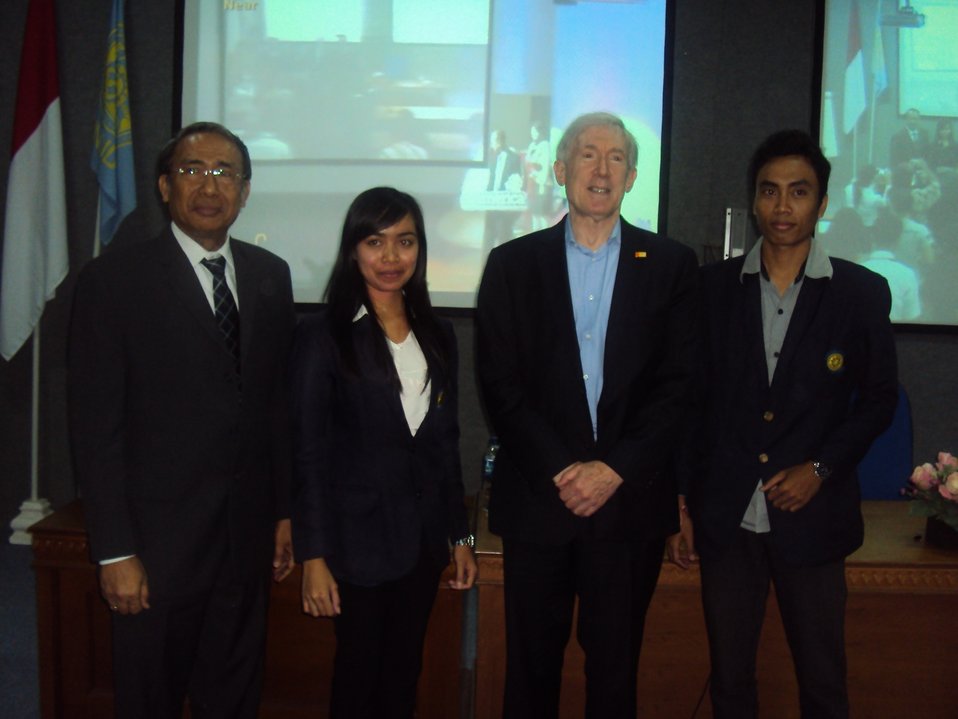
Under Secretary Hormats and Former Vice Chairman of Goldman Sachs Discuss Indonesia's Growing Role in the Global Economy

U.S. Under Secretary of State for Energy, Economic and Business Affairs Robert Hormats and Former Vice Chairman of Goldman Sachs discuss Indonesia's Role in the Global Economy at Udayana University in Denpasar, Bali, Indonesia, on July 22, 2011.